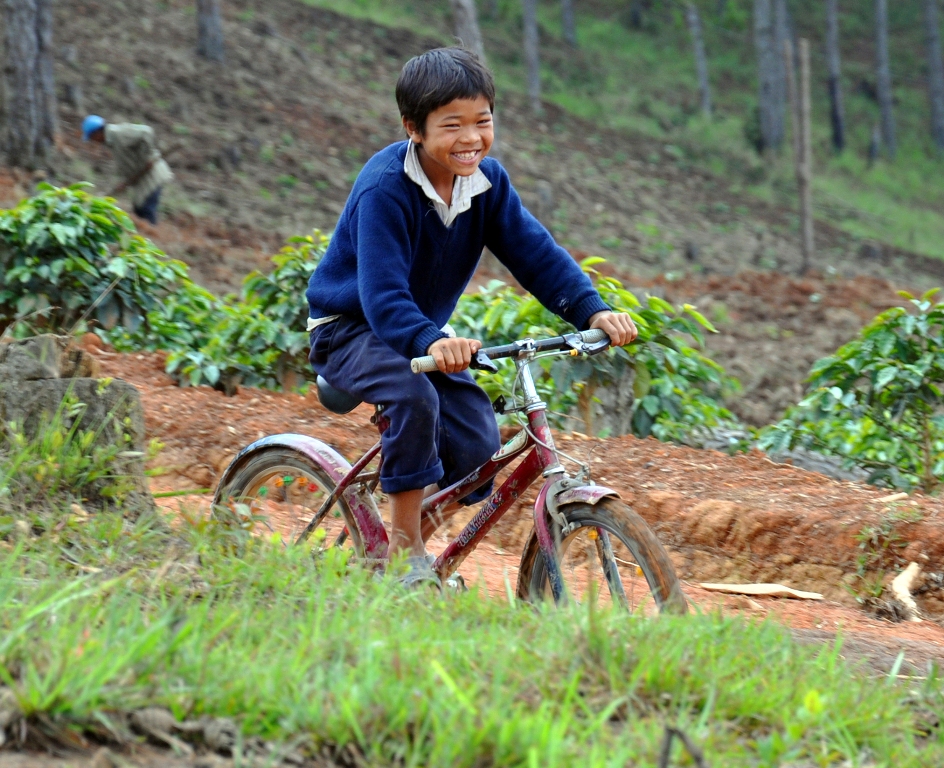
Helping conserve biodiversity in Vietnam